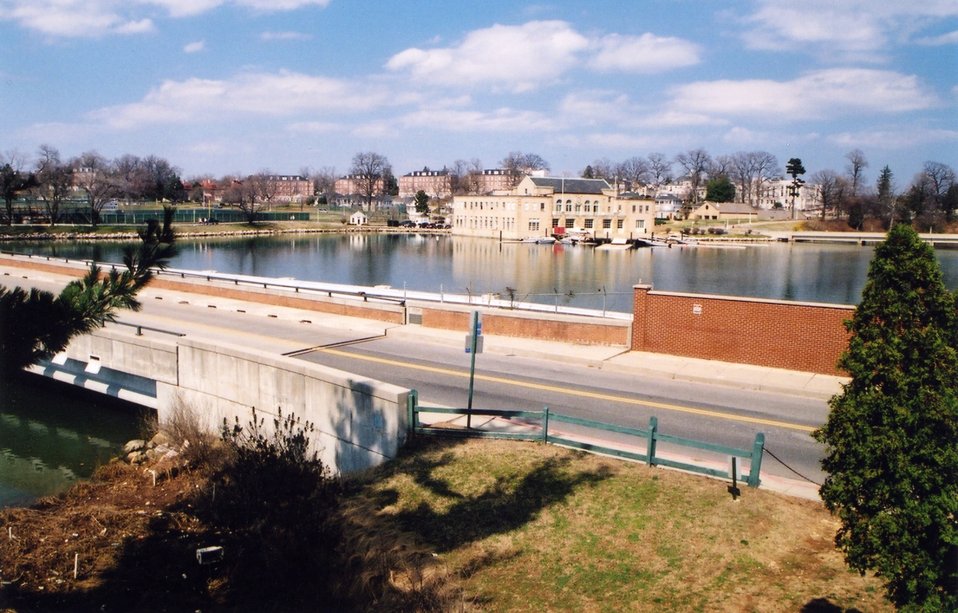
Annapolis area from St. John's College Boathouse.